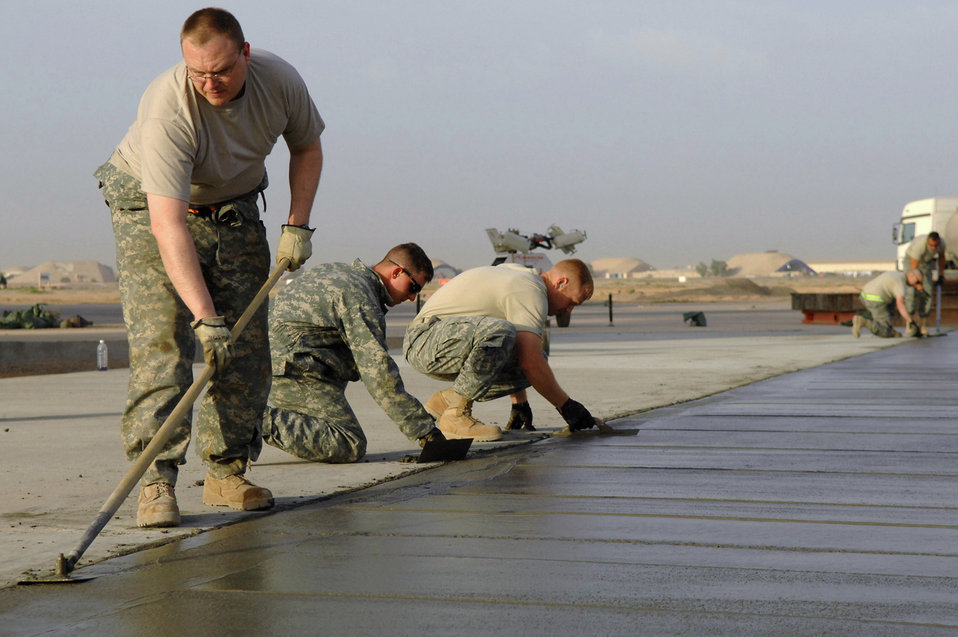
'Dirt Boyz' pave way for aircraft, Airmen

Master Sgt. Scott Austin and 332nd Expeditionary Civil Engineer Squadron Airmen smooth and edge the side of a new concrete pad May 13 at Balad Air Base, Iraq. The pad is part of a massive extension project of the flightline parking ramp to allow for more aircraft parking spots. Sergeant Austin is deployed from Eielson Air Force Base, Alaska.